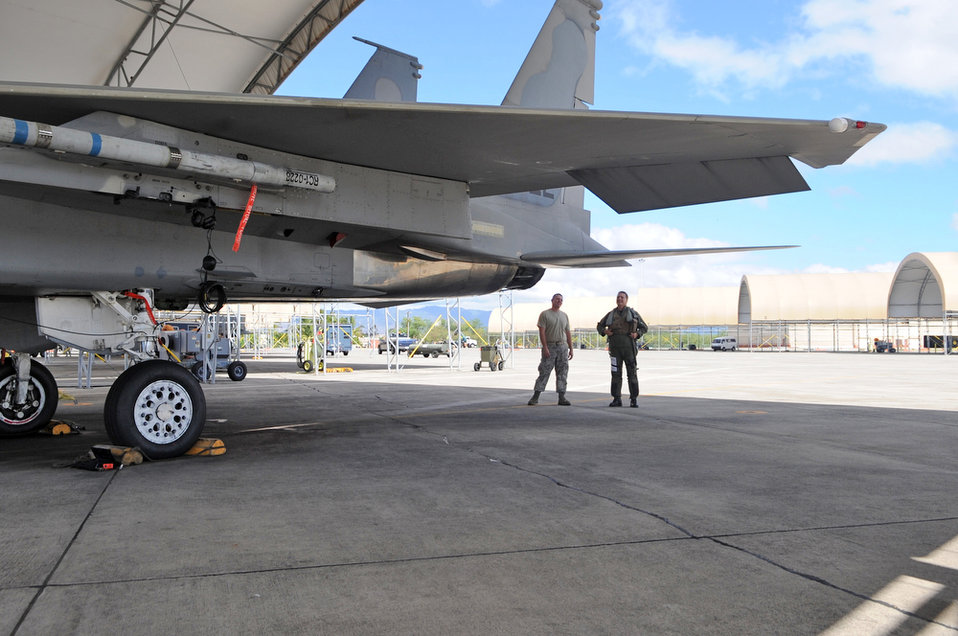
Final Training Mission for F-15 at Hickam

Airman First Class David Lairsey and Lt. Col. Mark Ladtkow conduct a visual inspection before Colonel Ladtkow's last F-15 training mission on Aug. 25, 2010 at Joint Base Pearl Harbor-Hickam, Hawaii. The 199th Air National Guard unit is transitioning from the F-15 to the F-22 Raptor. Airman Lairsey is an F-15 crewchief and Colonel Ladkow is an F-15 pilot. Both are with the 199th Fighter Squadron at JB Hickam.